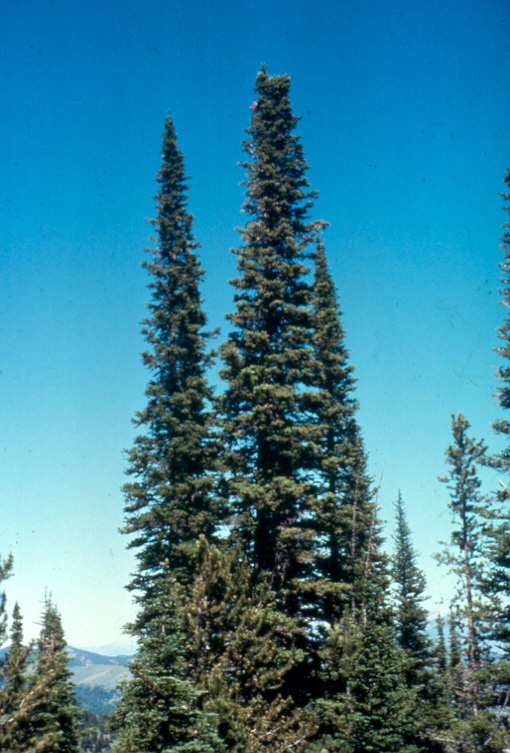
Salmon FIeld Office UCSC Upper Columbia Salmon Clearwater District